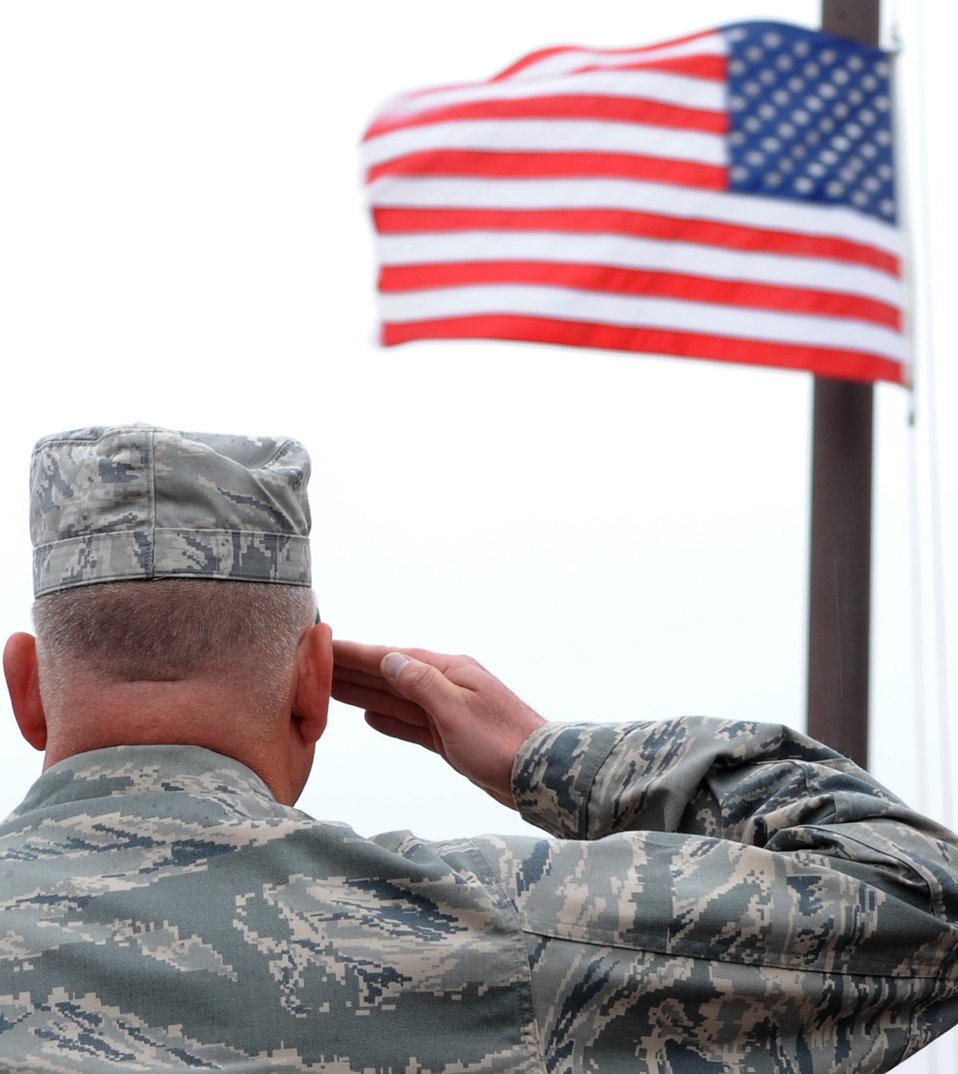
Airmen honor the fallen

The 506th Explosive Ordnance Disposal Company commemorates their fallen EOD brethren during the 41st Annual EOD Memorial Ceremony April 17, 2010, at Kirkuk Regional Air Base, Iraq.